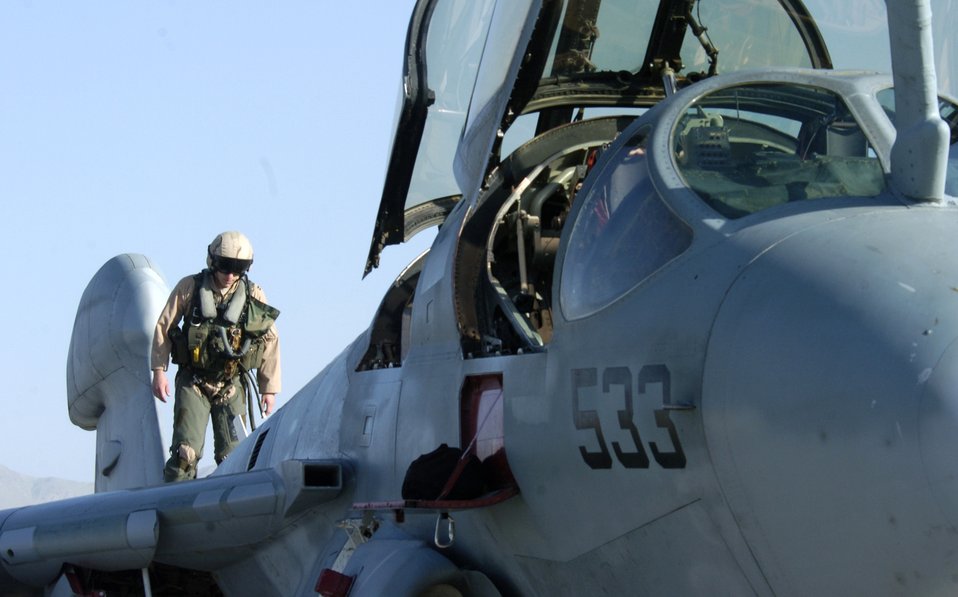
On the prowl

Air Force Capt. Matthew Polus walks on a Navy EA-6B Prowler and checks it before takeoff from Bagram Air Base, Afghanistan, on Thursday, June 15. Captain Polus is an electronic countermeasures officer with the Electronic Attack Squadron 133 Wizards. Air Force and Navy crewmembers fly the Prowler, providing support to ground troops in Afghanistan.